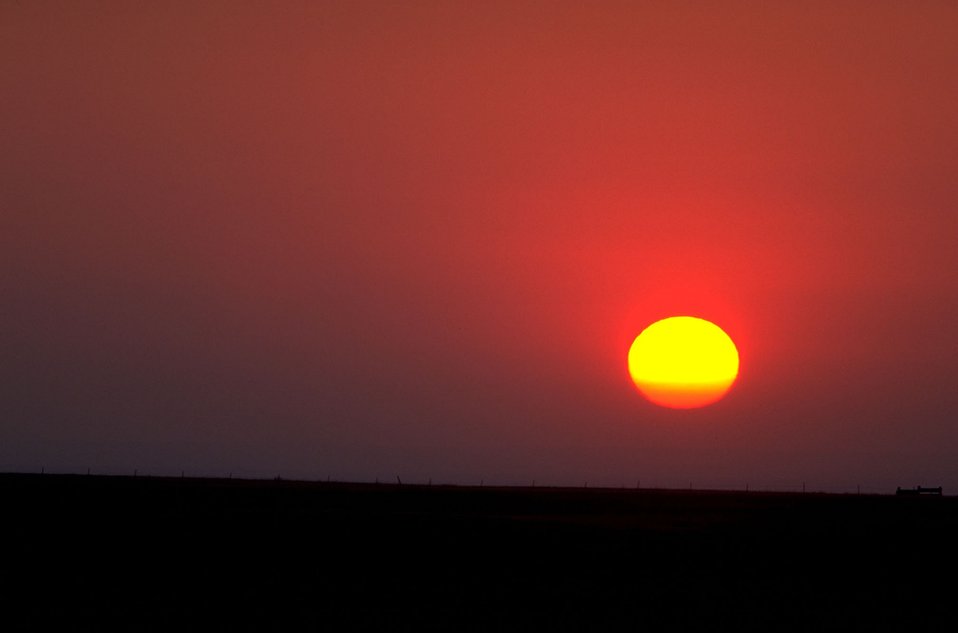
Sunrise over North Ridge in Fort Meade, SD